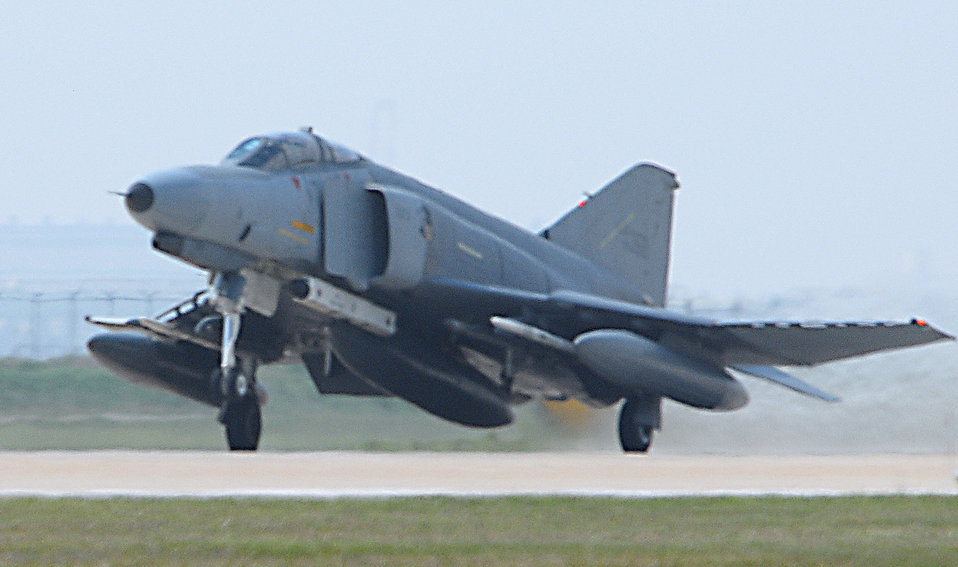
Max Thunder 09-01

A Republic of Korea Air Force F-4E Phantom takes off from Kunsan Air Base, Republic of Korea, May 11 for a training mission during exercise Max Thunder 09-01. The exercise is a 7th Air Force-designed, bilateral training opportunity that aims to test aircrews' warfighting skills in realistic combat situations that combine both ROKAF and U.S. Air Force flying and maintenance personnel.